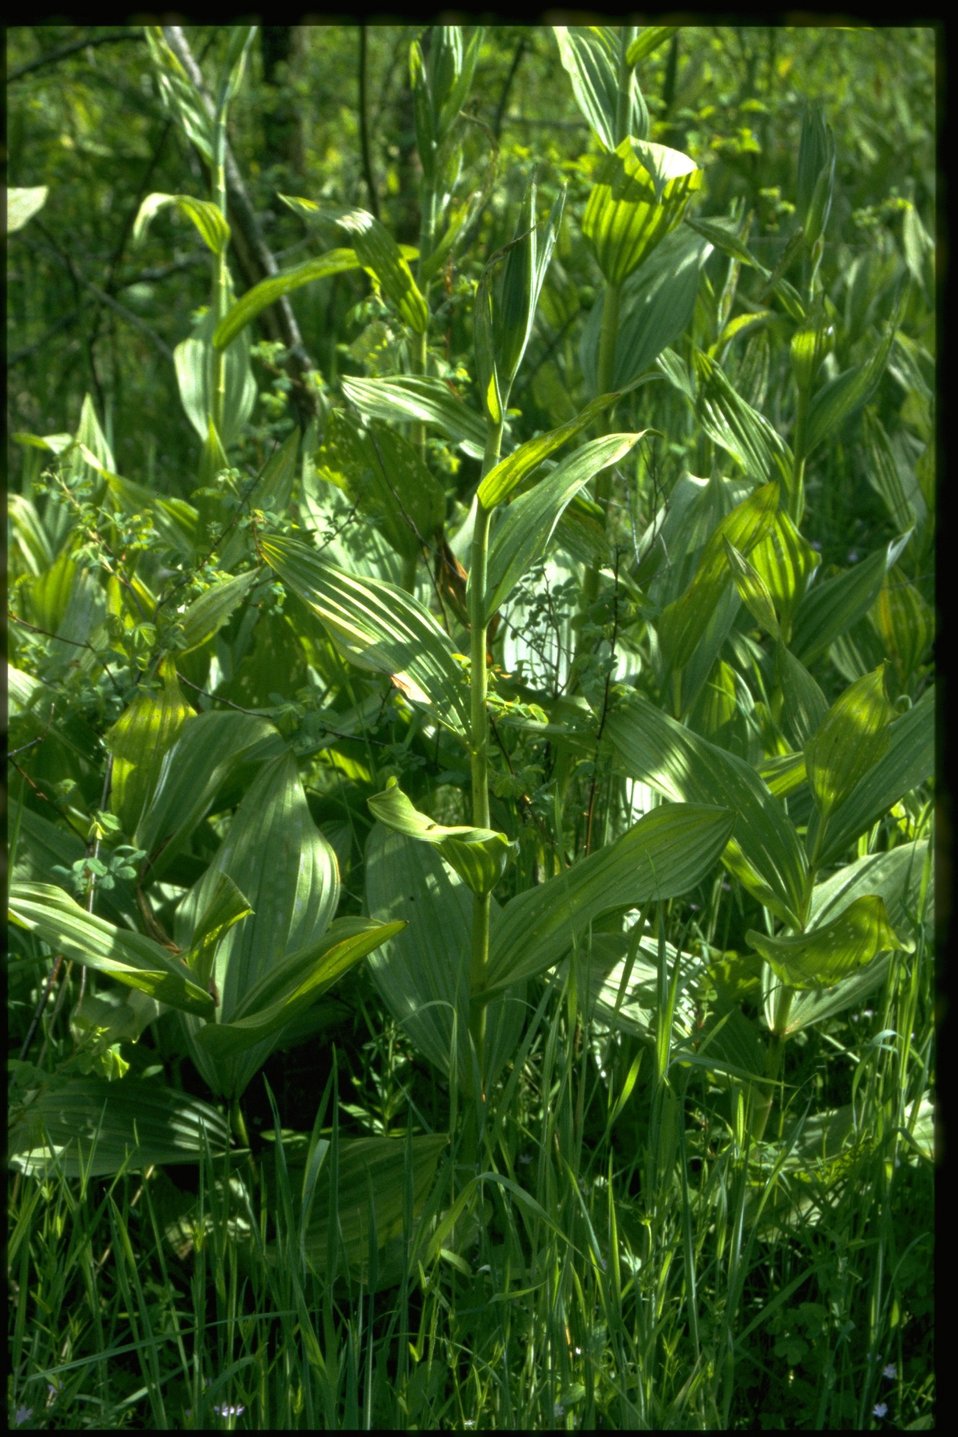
Farshot of Veratrum viride.